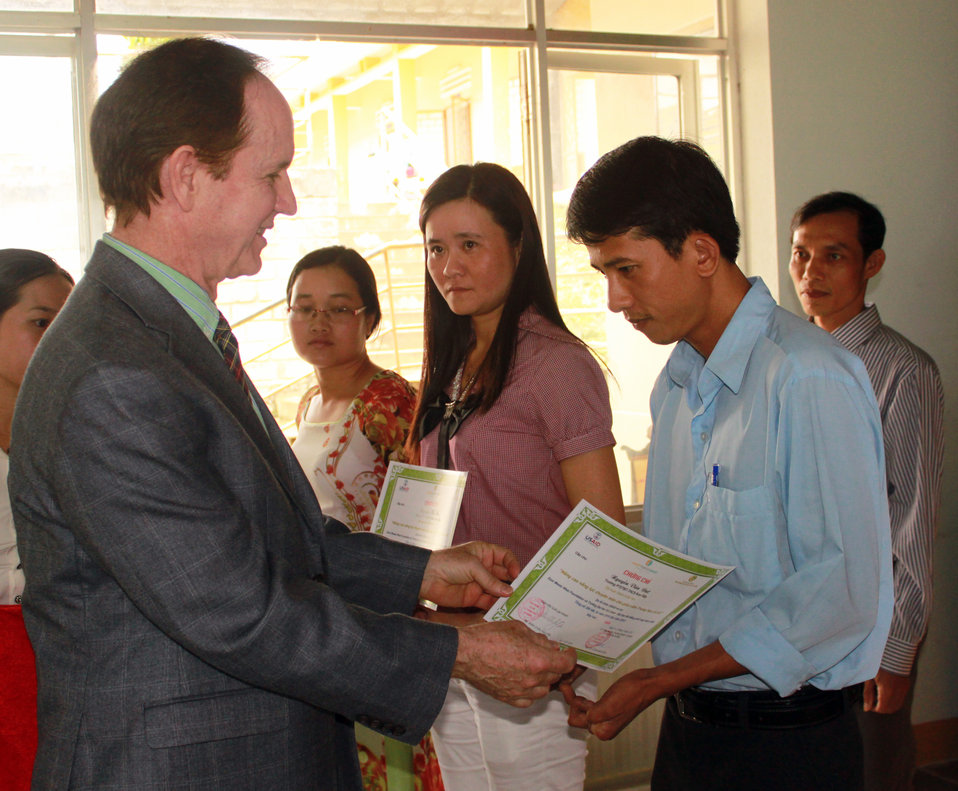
USAID Mission Director Francis Donovan gives certificates to teachers at the graduation ceremony